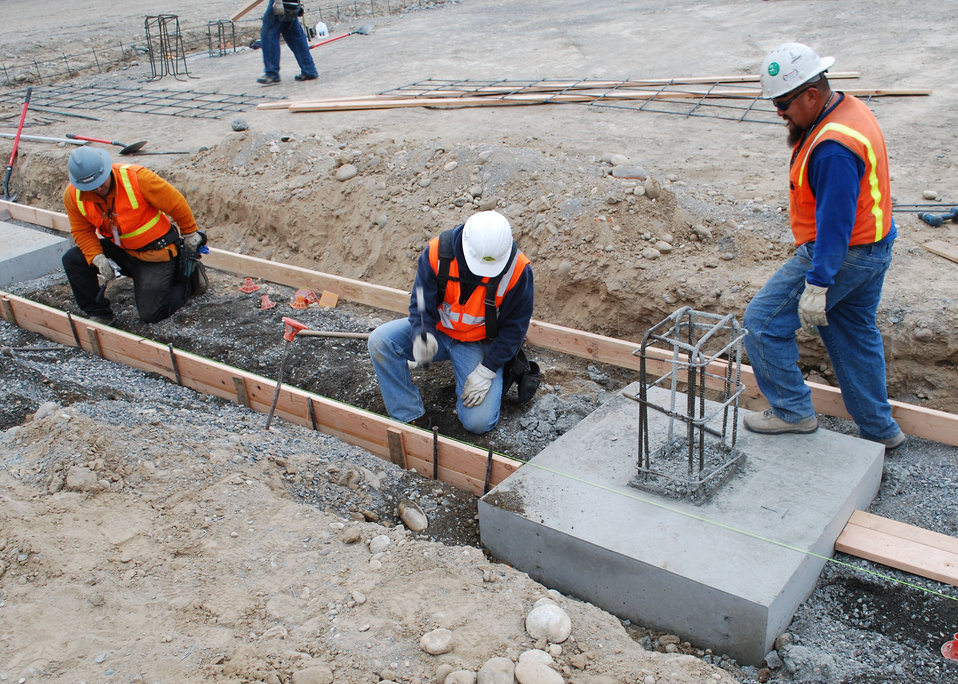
DX Groundwater Treatment Facility concrete pour

Workers construct a facility footing for the 100-DX Groundwater Treatment Facility. The facility is expected to treat 3.6 billion gallons of groundwater in its lifetime and ultimately help DOE meet its commitment to contain all chromium contamination to prevent it from reaching the Columbia River by 2012.